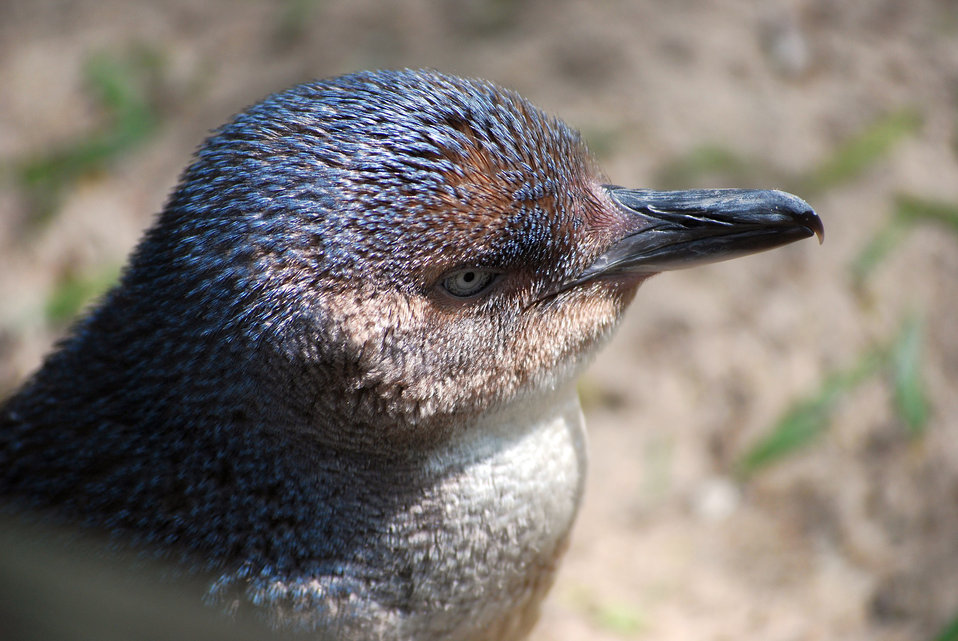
Penguin profile

Cute penguin headshot.